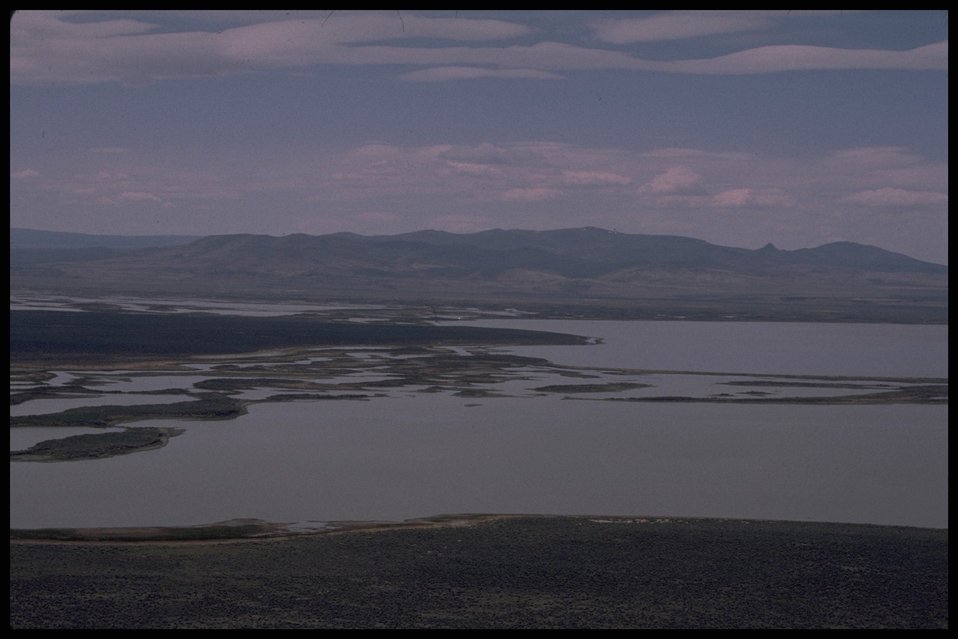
Scenic view of Warner Wet Lands, Lakeview District.